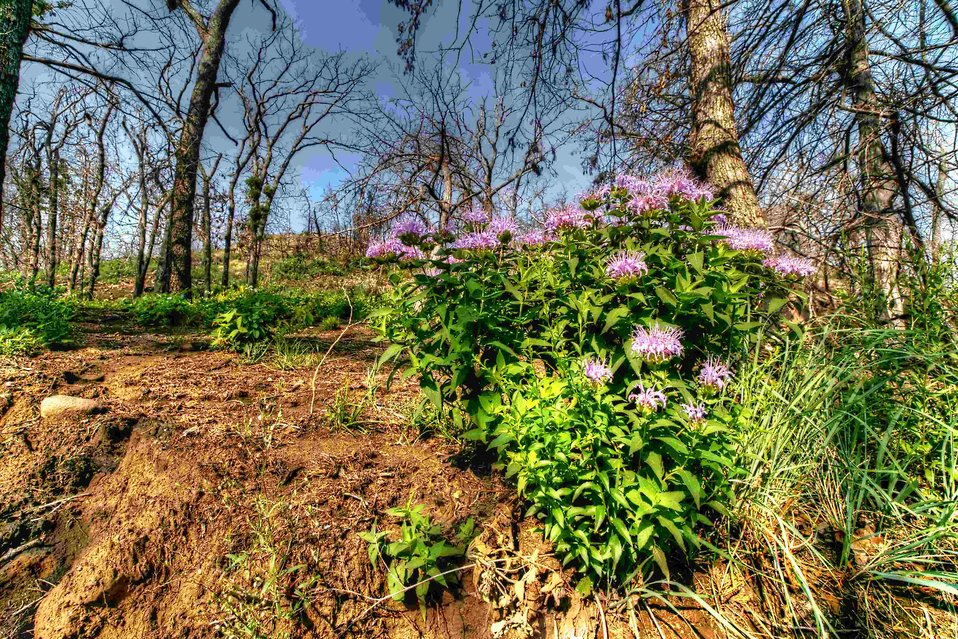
Bee balm monarda

Wildflowers at Wichita Mountains Wildlife Refuge in Oklahoma.